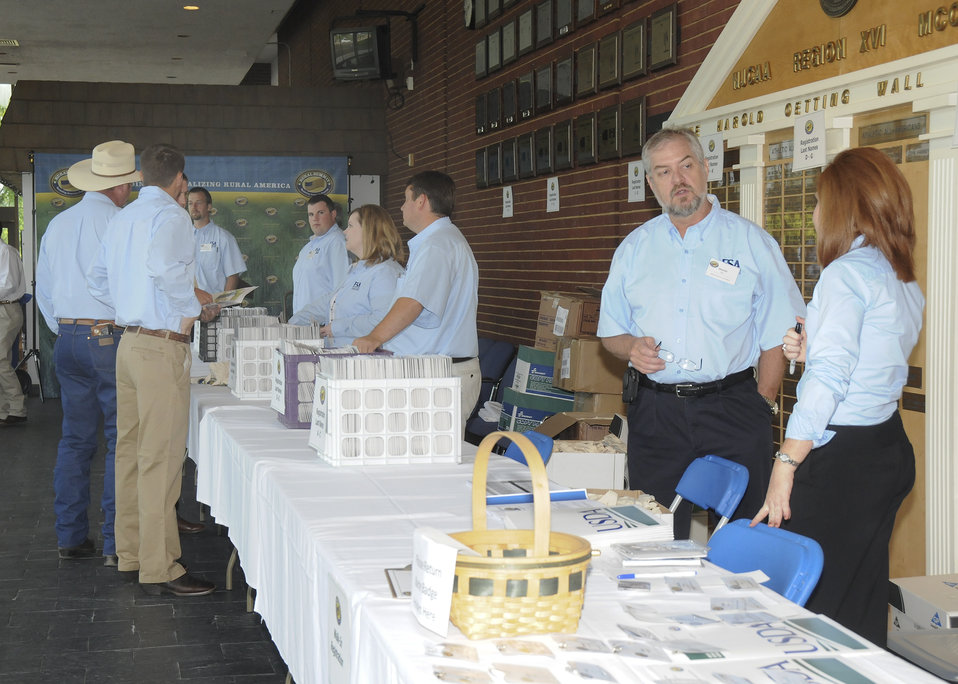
USDA employees prepare to check in the crowds that will be attending the National Rural Summit held at Jefferson College in Hillsboro, MO, on Thursday, June 3, 2010. USDA Photo 10di1386-07.